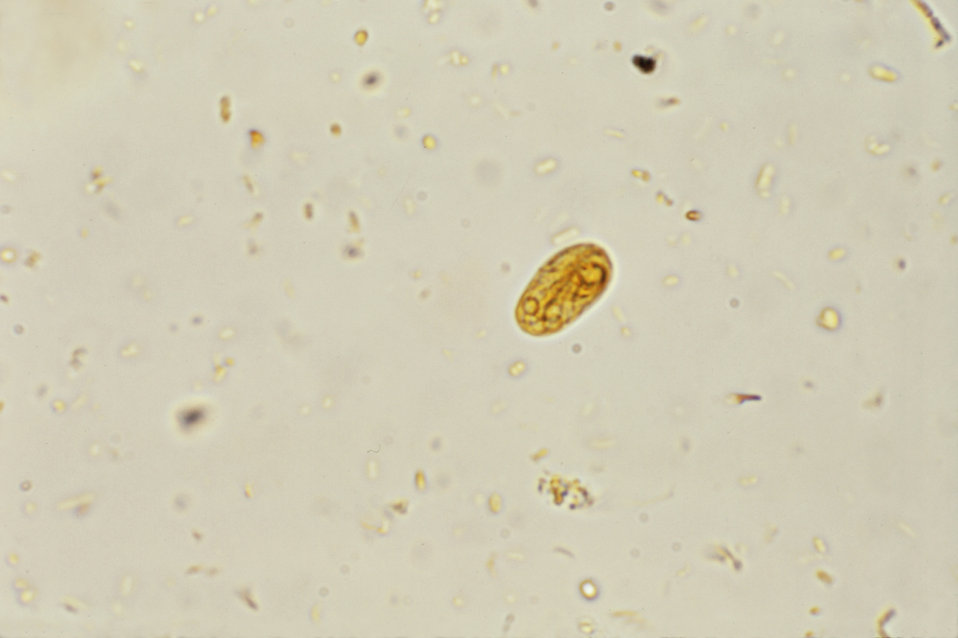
Using an iodine staining technique, this photomicrograph reveals the presence of a Giardia lamblia cyst.